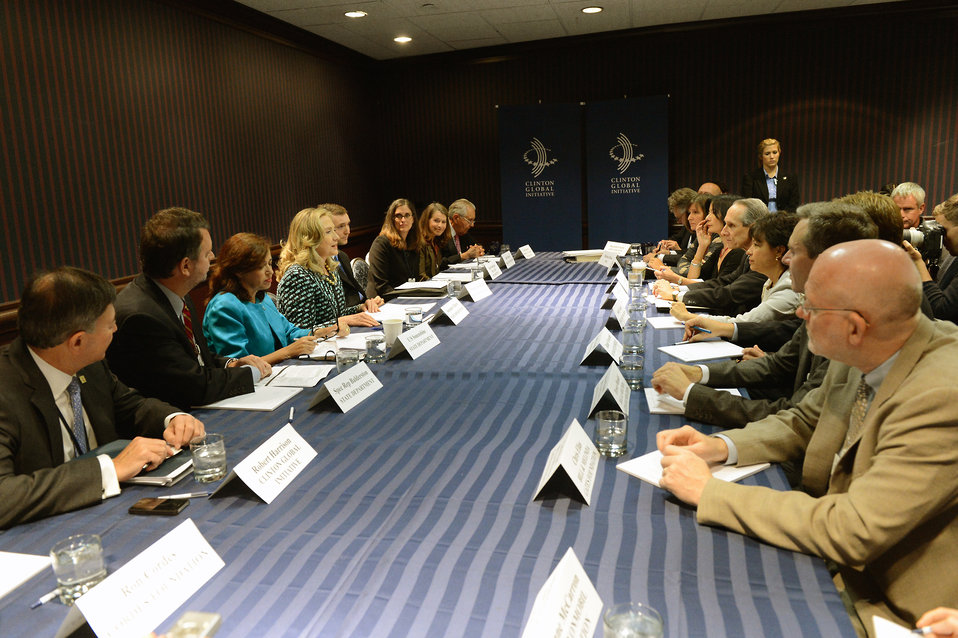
Secretary Clinton Delivers Remarks at the Global Philanthropy Working Group Launch

U.S. Secretary of State Hillary Rodham Clinton delivers remarks at the Global Philanthropy Working Group Launch in New York, New York on September 24, 2012.